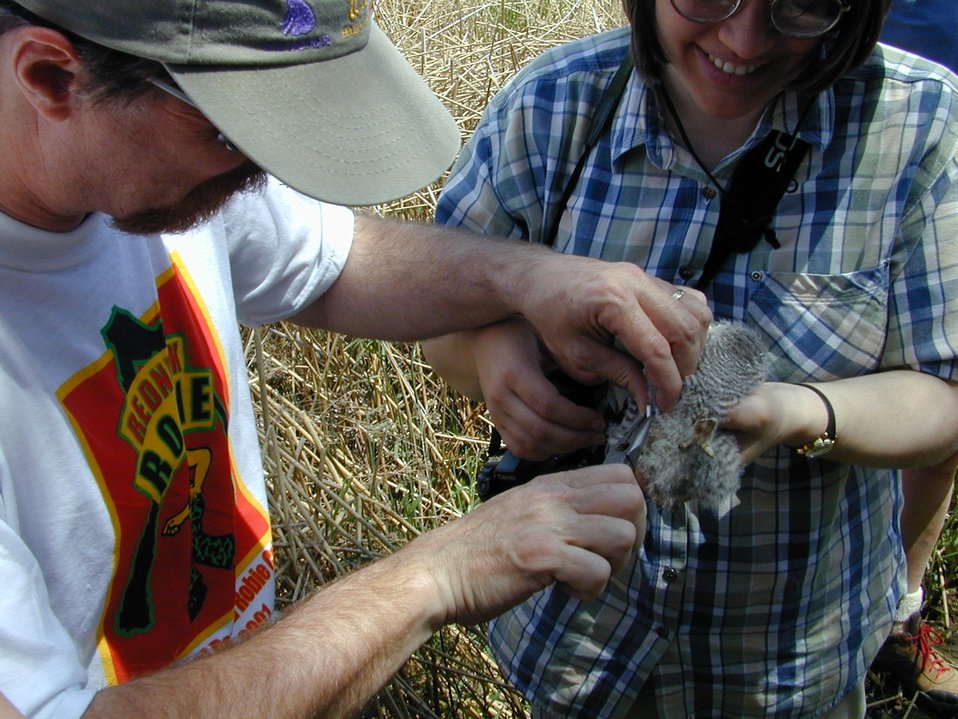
Environmental Education Fire Workshop Timberline High School Fall 2000